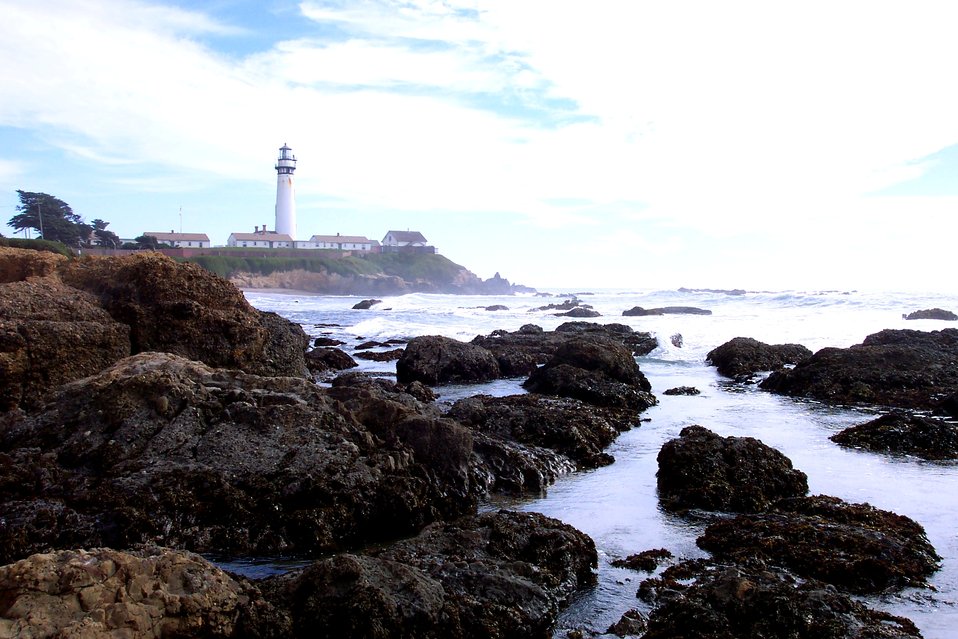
Pigeon Point Lighthouse as seen from the north.